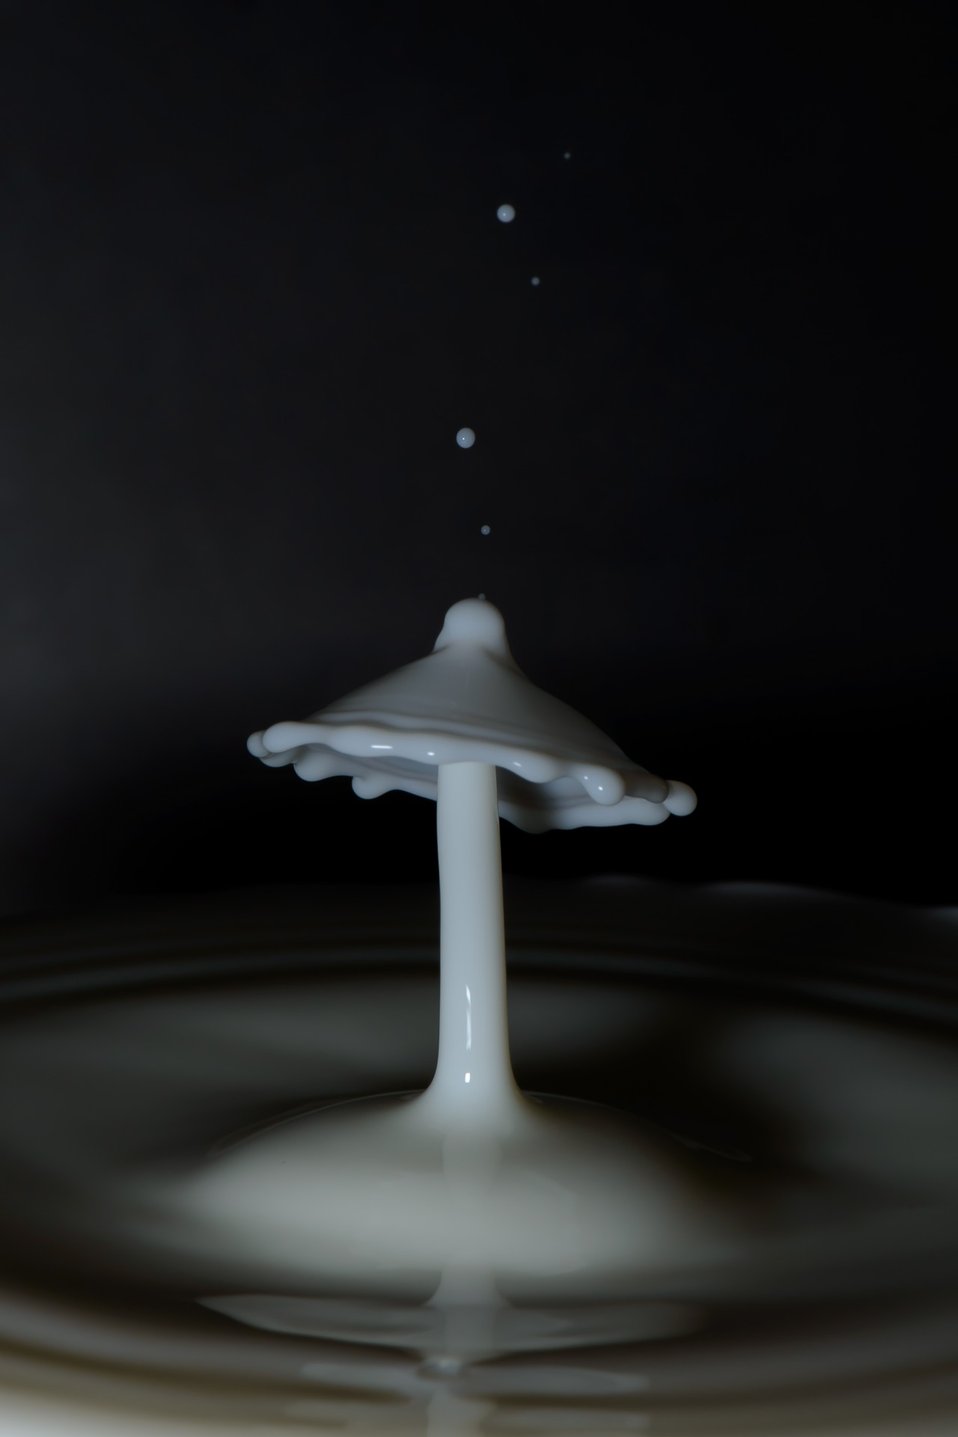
The lamp

Two drop collision.